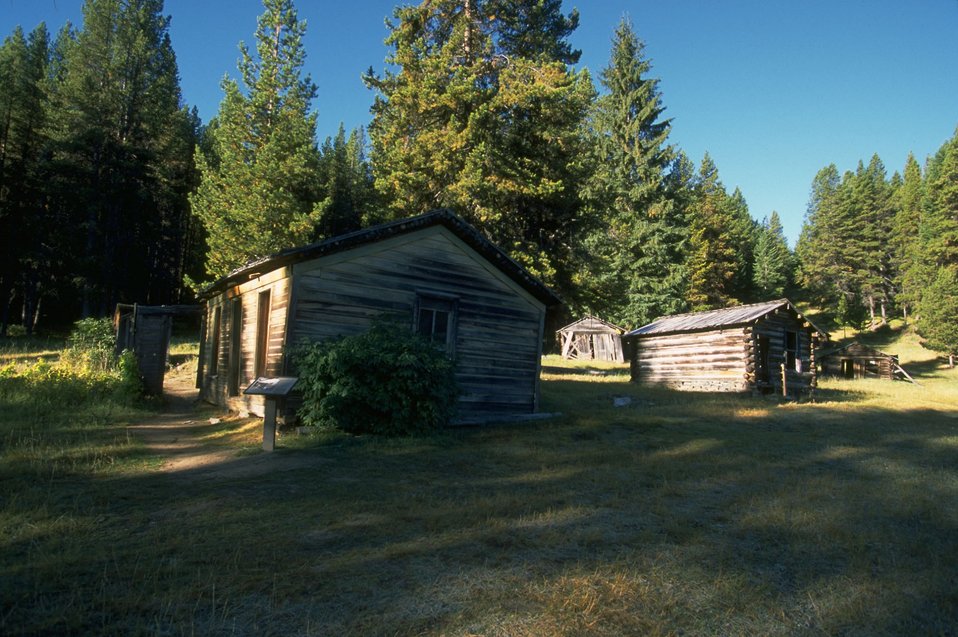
Garnet Ghost Town, Adams house (left) Post Office (right)